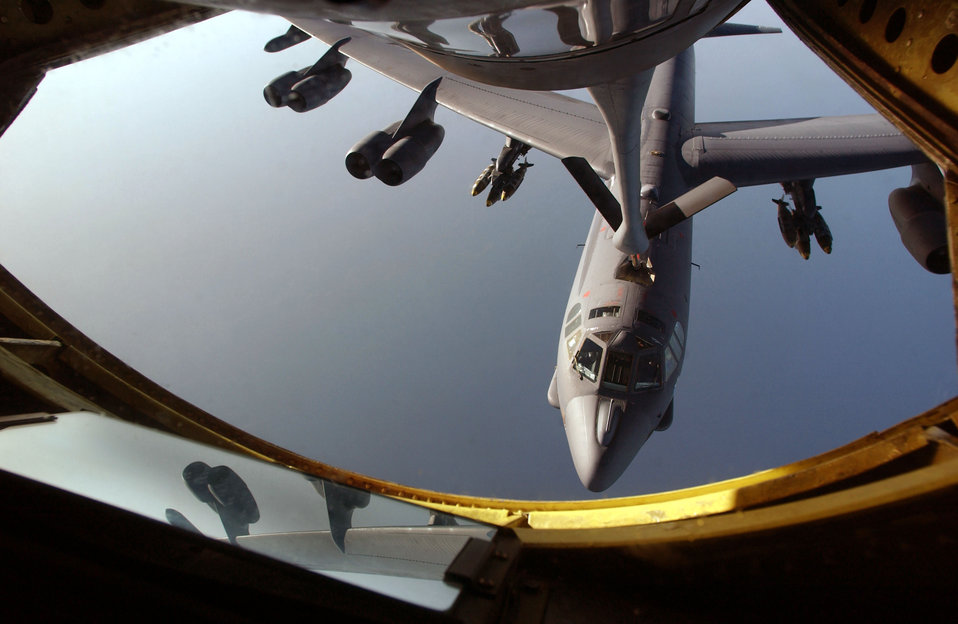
Getting gas

OPERATION IRAQI FREEDOM -- A B-52 Stratofortress receives fuel from a KC-135 Stratotanker over the Indian Ocean. The KC-135 crew is from the 931st Air Refueling Group at McConnell Air Force Base, Kan., and is deployed to the 405th Air Expeditionary Wing to support Operation Iraqi Freedom.